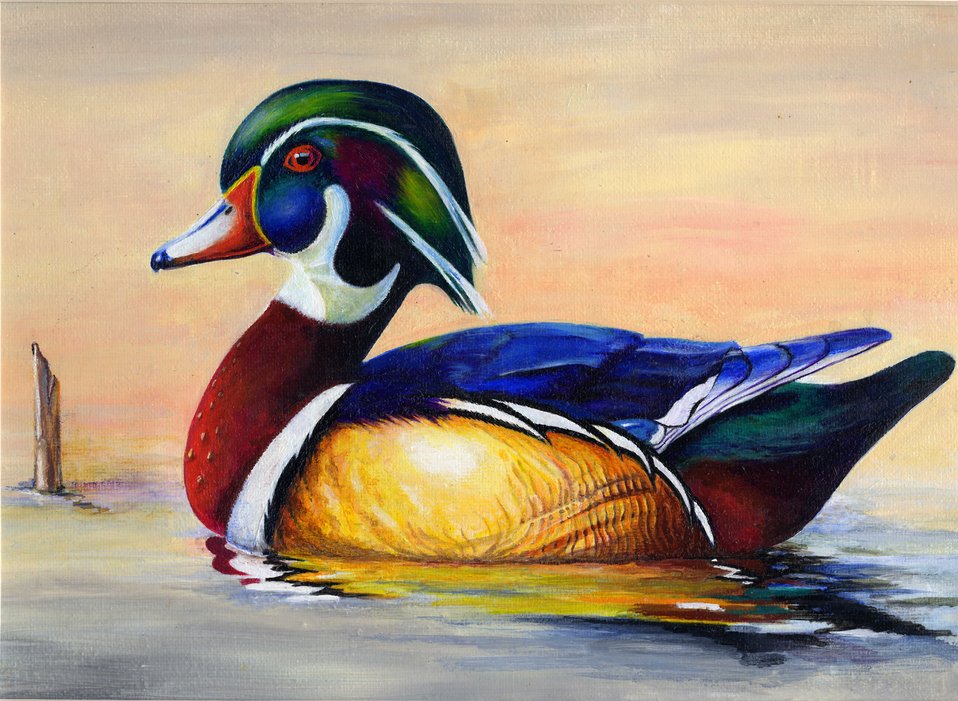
Michigan

2012 Jr Duck Stamp Program
State Best of Show
Michigan